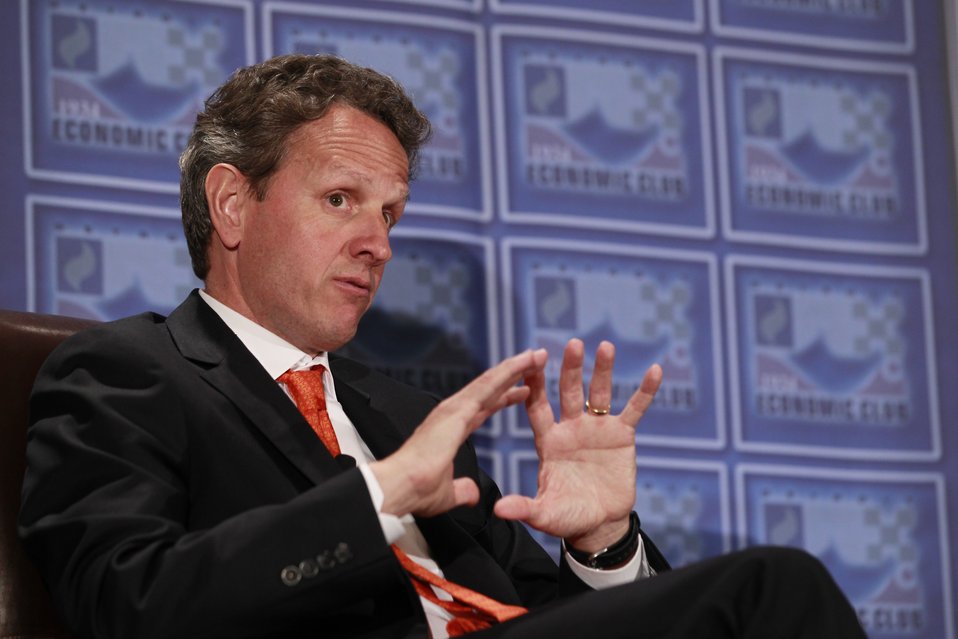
Secretary Geithner Visits Detroit

Secretary Tim Geithner met with local business leaders and participated in a moderated discussion hosted by the Detroit Economic Club on the path forward for the nation’s fiscal policy, strengthening U.S. competitiveness and job creation, and the state of the economy.